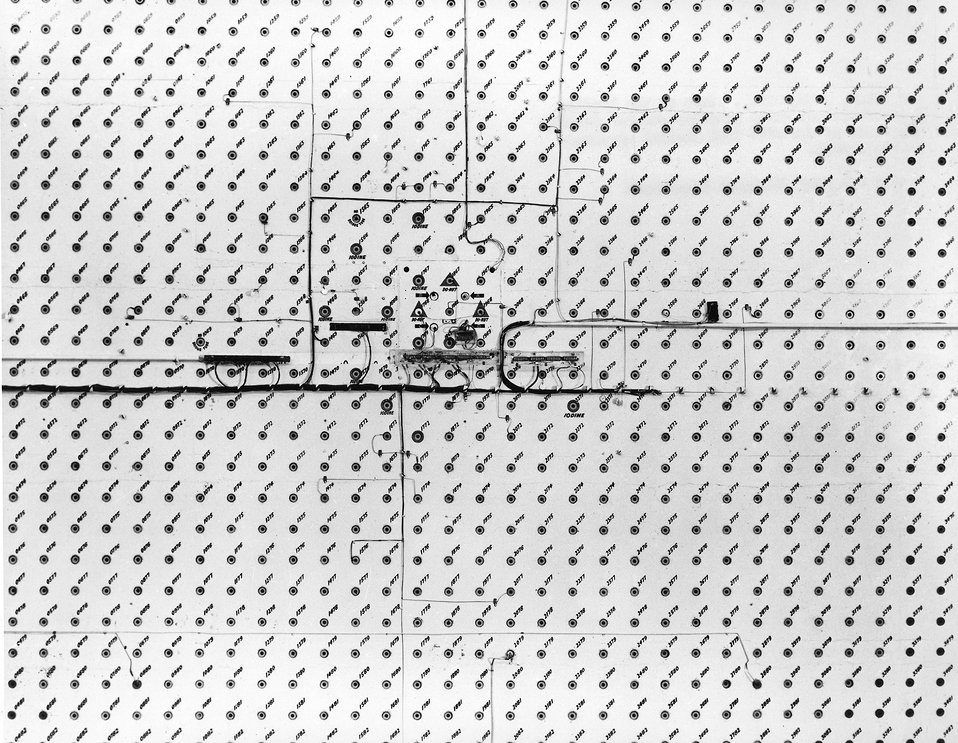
Part of the loading face of the Oak Ridge graphite reactor showing a portion of the 1248 fuel channel openings in the shield. c. 1961